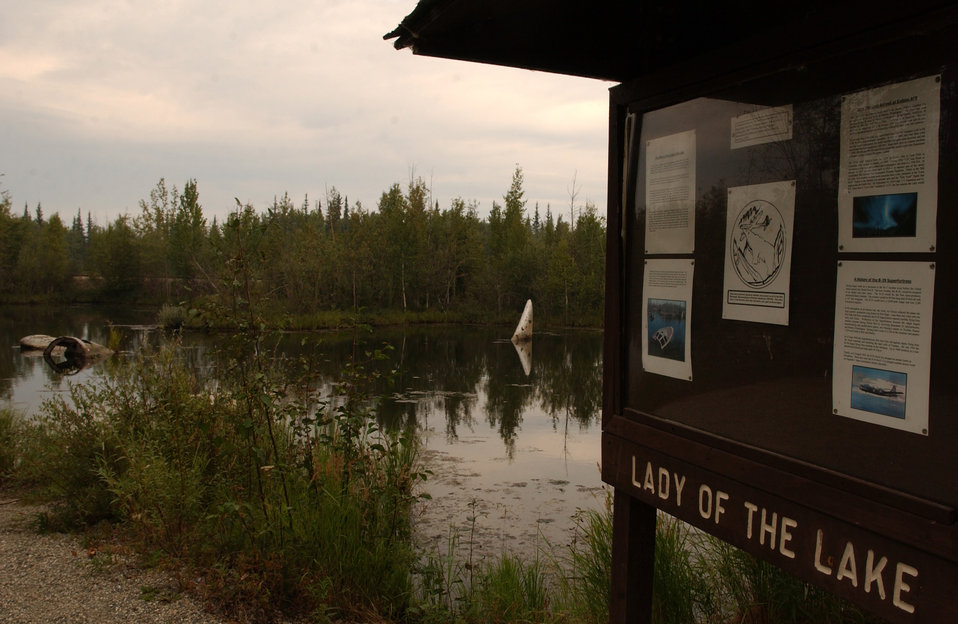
The Lady

EIELSON AIR FORCE BASE, Alaska -- The "Lady of the Lake" is what remains of a WB-29 Superfortress weather reconnaissance aircraft that rests in a water-filled gravel pit here. The aircraft was taken to the pond it currently rests in and was used for open-water extraction training until it became too dangerous.